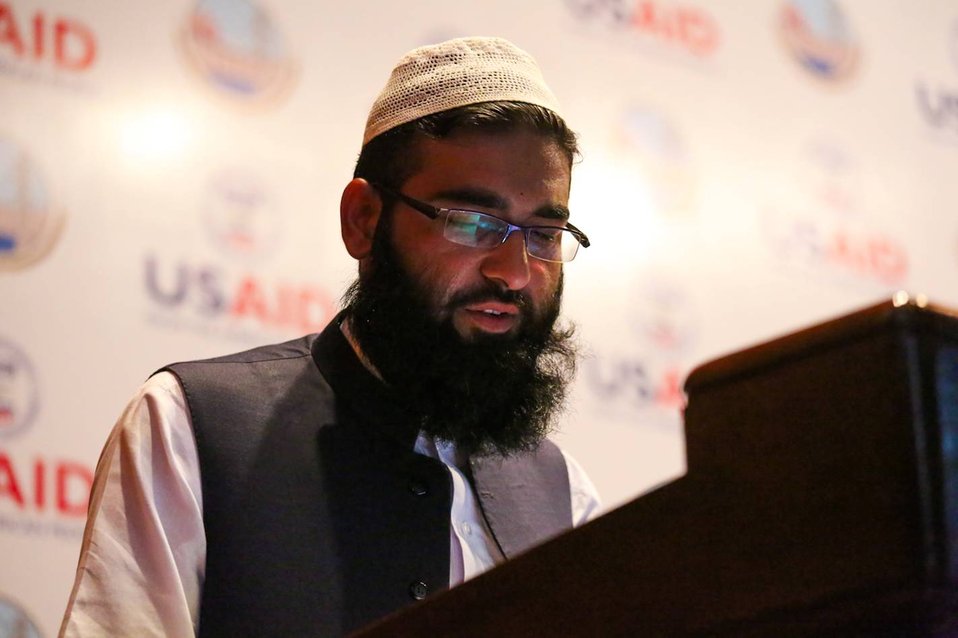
Islamabad, September 12, 2012 - Project Launch Ceremony of Waran Canal Irrigation System